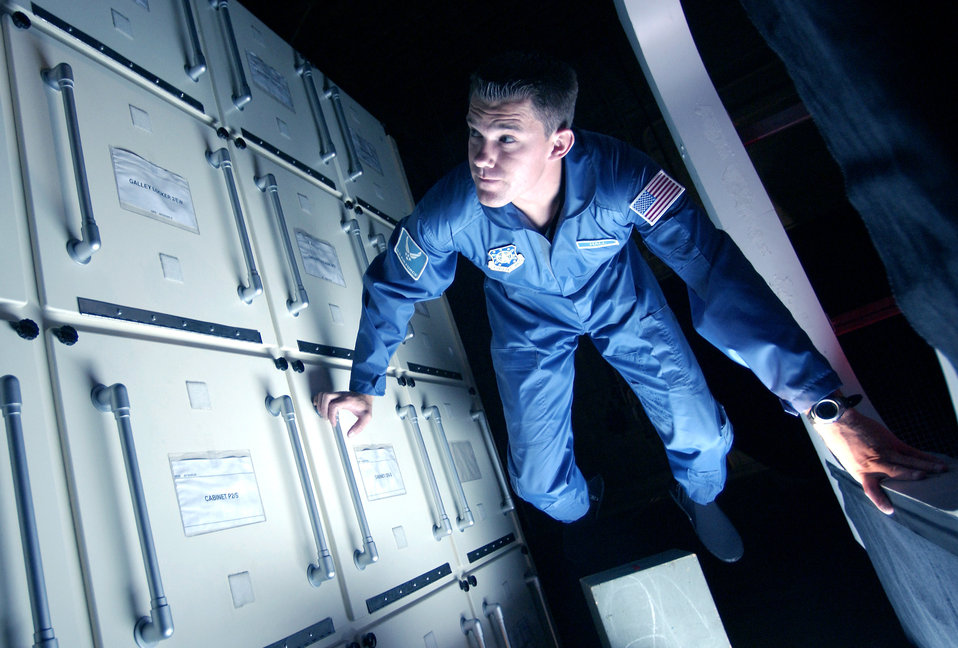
I believe I can fly

HOLLYWOOD -- Capt. Ryan Hall floats through a scene during filming of new Air Force television commercials at Universal Studios here May 19. Four ads being filmed over two weeks in several locations throughout California will air in the fall. Captain Hall works with space systems at Los Angeles Air Force Base, Calif.